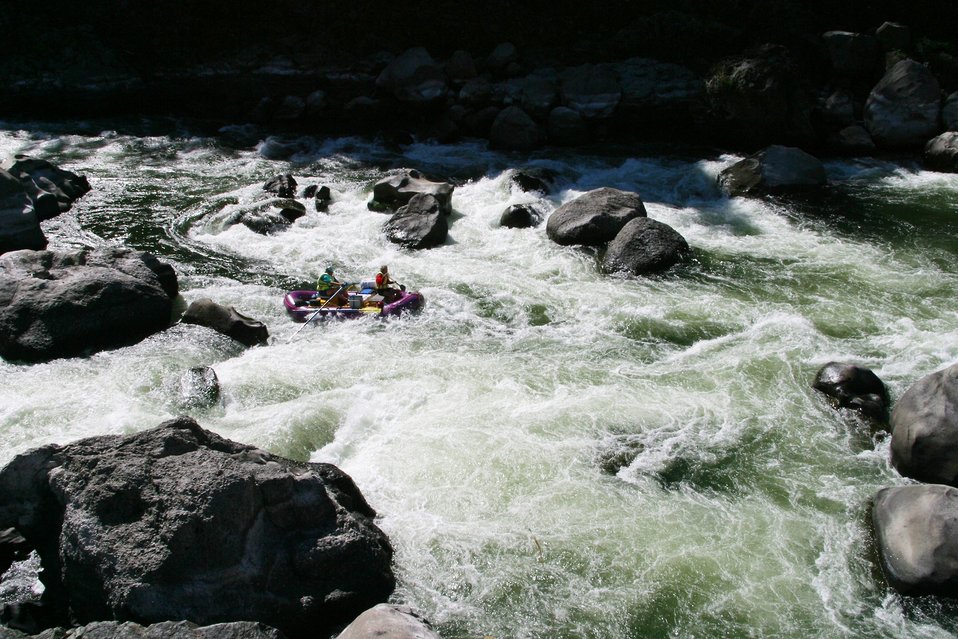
Blossom Rapids.